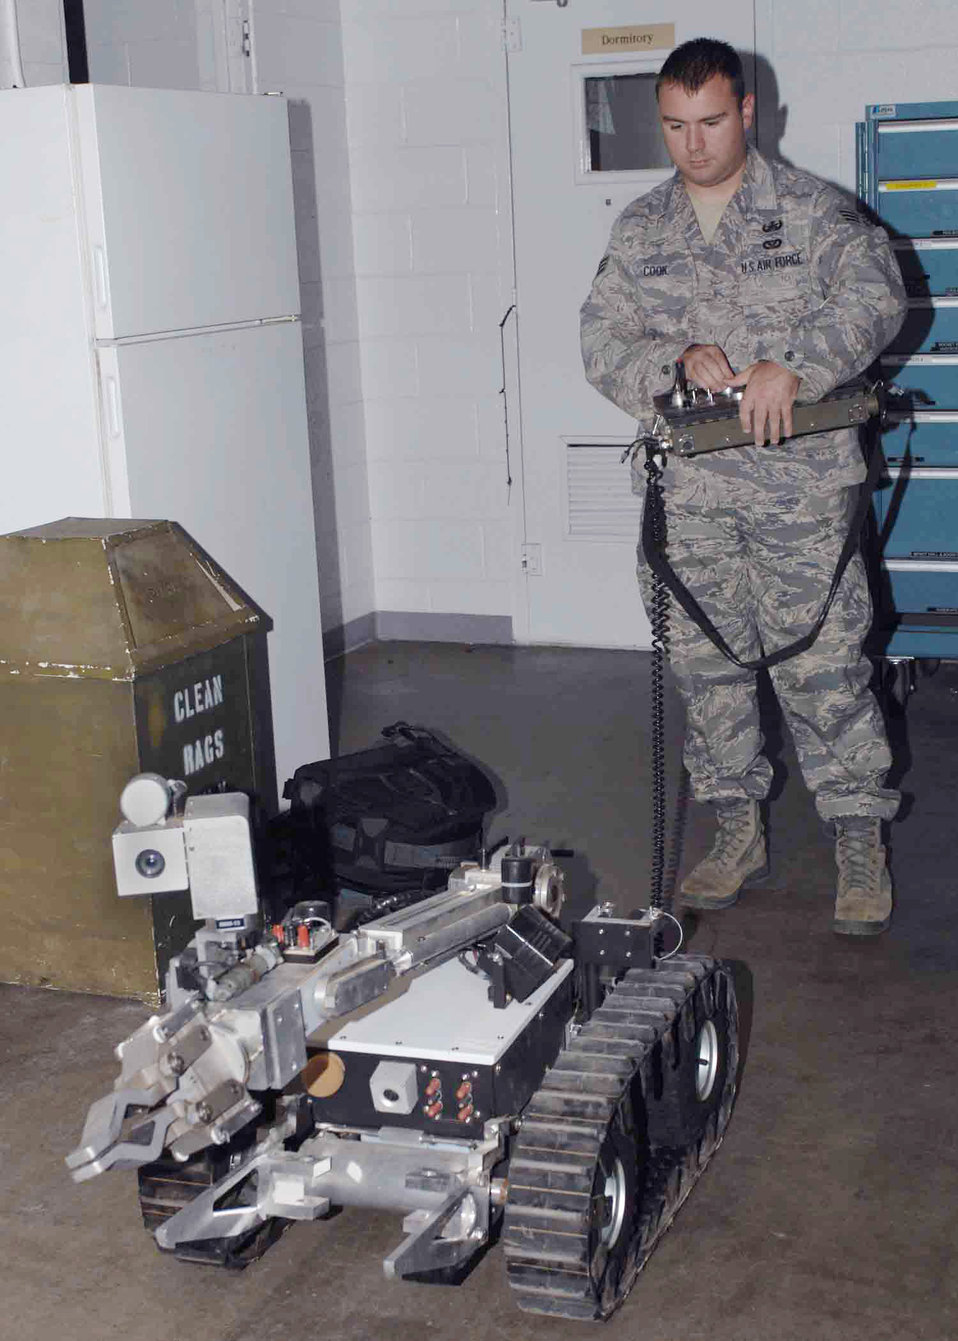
EOD Airmen help keep community safe

Senior Airman Michael Cook operates the HD-1 remote entry robot July 29 at Cannon Air Force Base, N.M. HD-1s are modeled robots, made by Remotech Andros, that assist in remote-entry situations and help keep danger at a distance. Airman Cook is a 27th Special Operations Civil Engineer Squadron explosive ordnance disposal member.